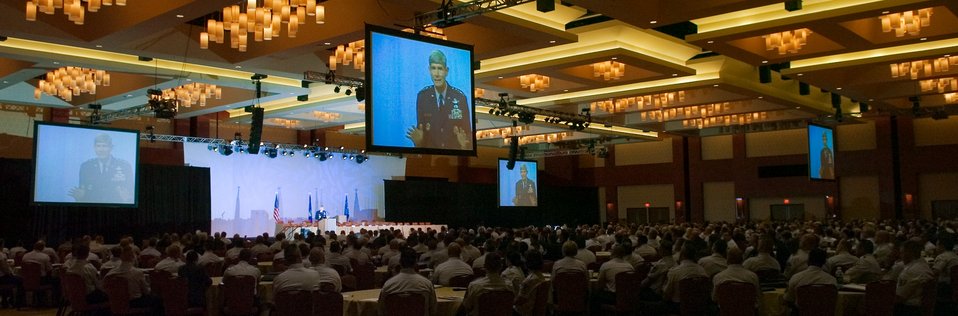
Air Force chief of staff discusses leadership goals

The Texas Ballroom at the Grand Hyatt Hotel in San Antonio was packed during the keynote speech by Gen. Norton Schwartz, Air Force chief of staff, Aug. 25. General Schwartz gave his speech at the Air Force Sergeants Association's annual Professional Airmen's Conference and International Convention.